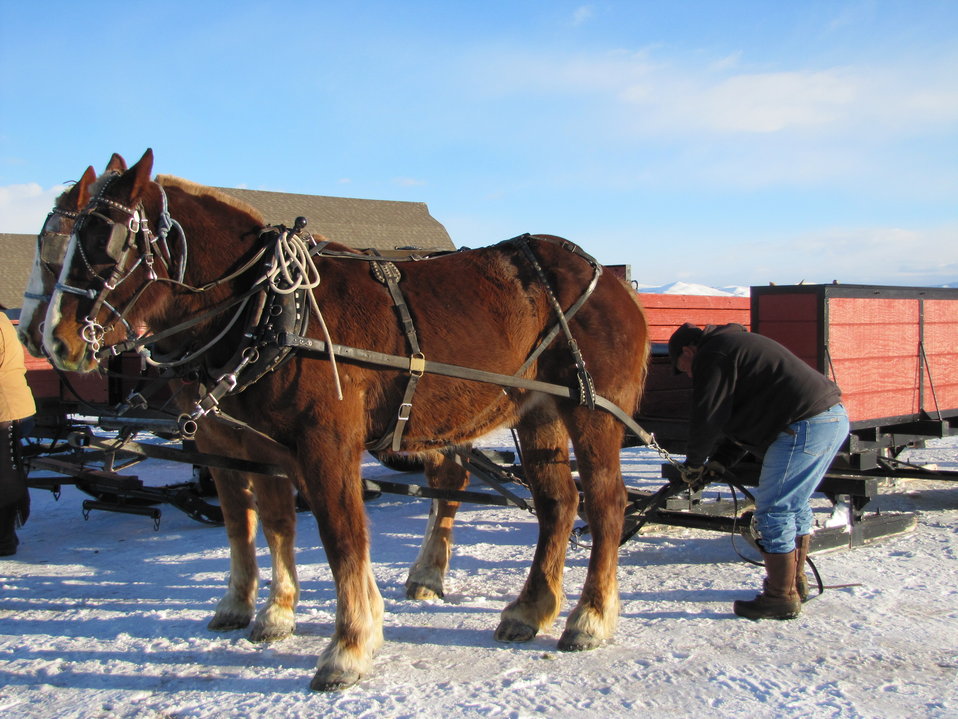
The Final Step in Preparation

Here, a sleigh driver hooks the tugs to the eveners, both parts of the hardware that attach the horses to the sleigh.